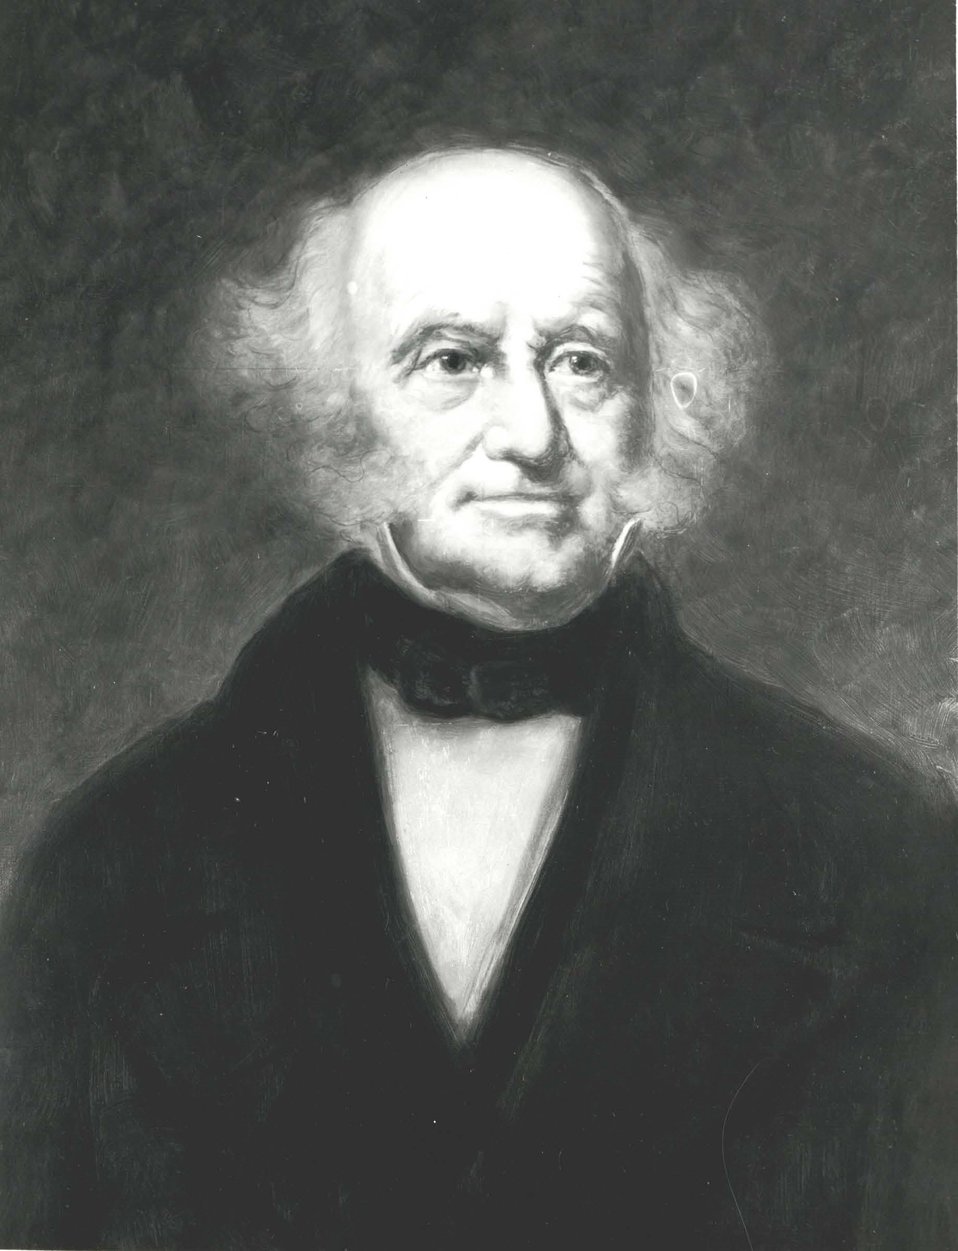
Martin Van Buren, U.S. Secretary of State, March 28, 1829 to March 23, 1831